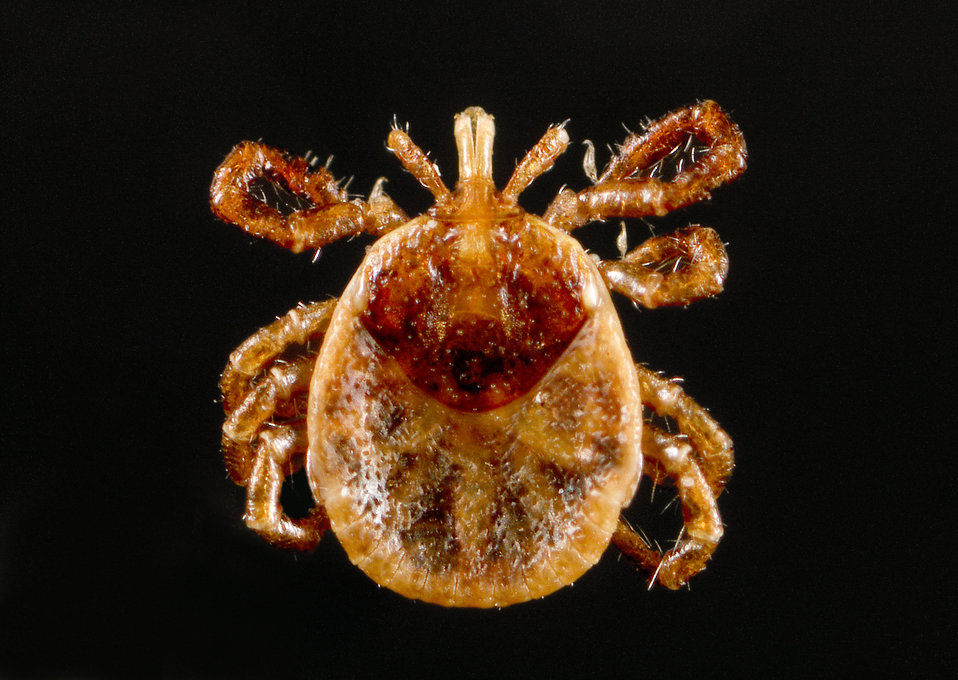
This photograph depicted a dorsal view of an immature, or nymphal, "lone star tick", Amblyomma americanum. Nymphal ticks are much smaller than adult ticks, and people might not notice a nymph until it has been feeding for a few days. Nymphs are, therefore, more likely than adult ticks to transmit diseases to people.